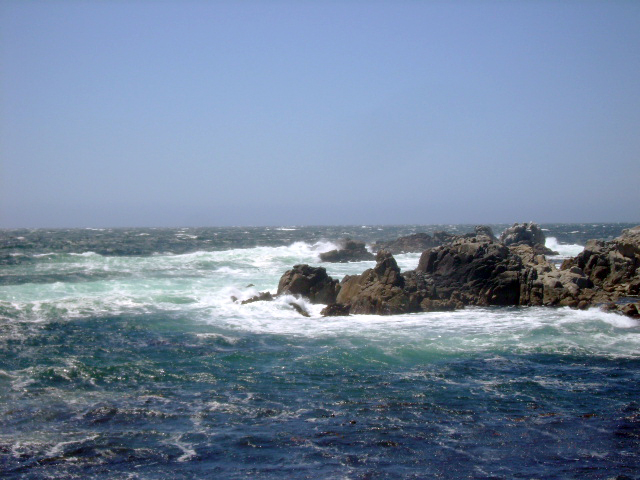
17 Mile Drive. June 2008.